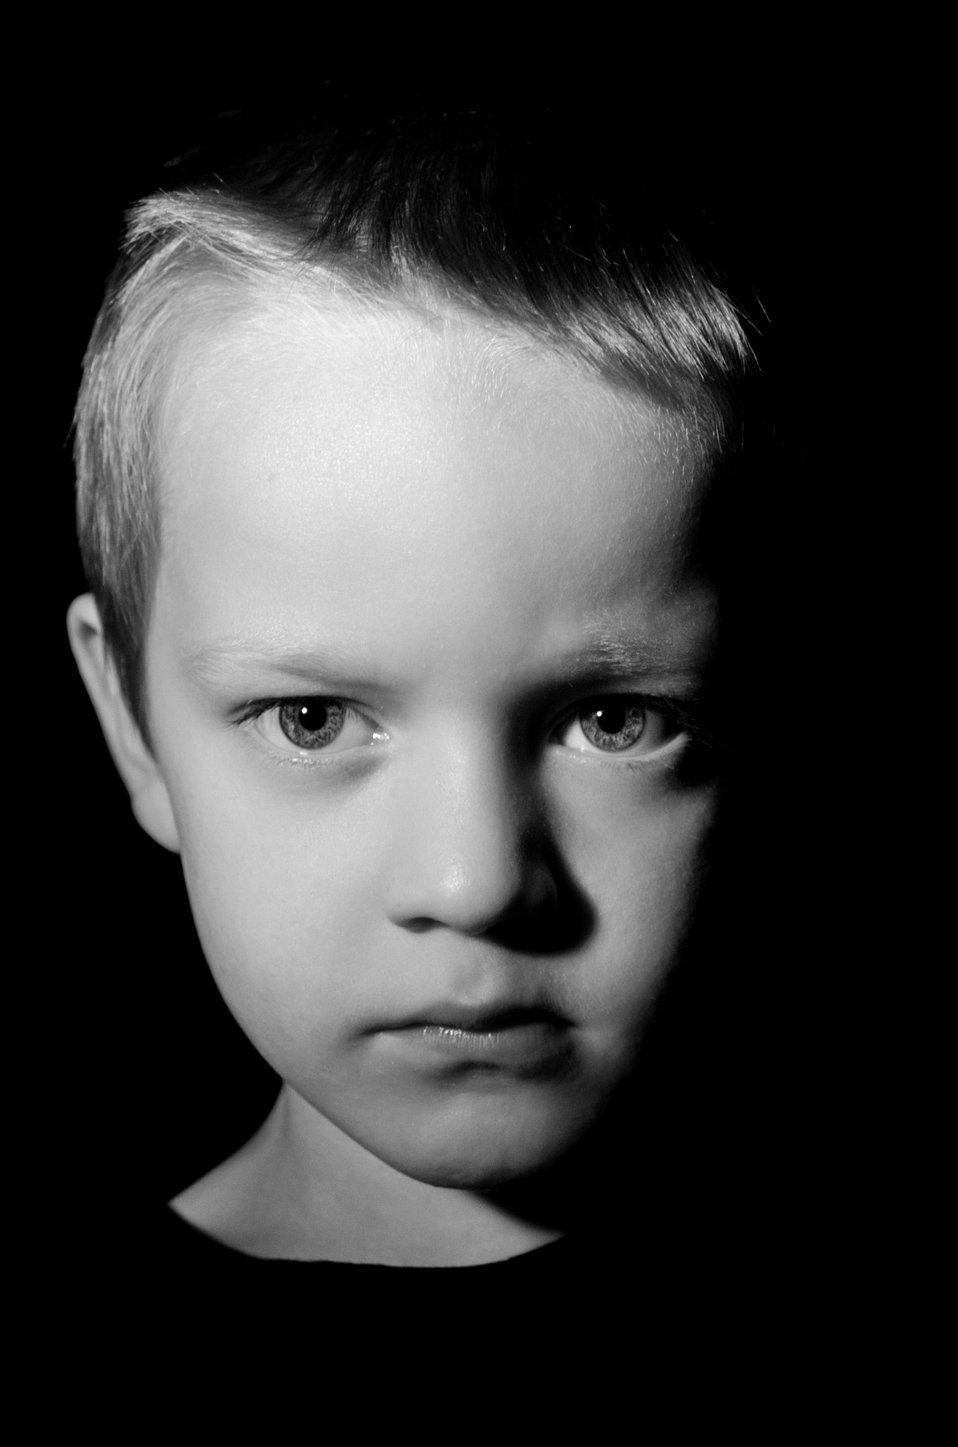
Child - portrait black and white.